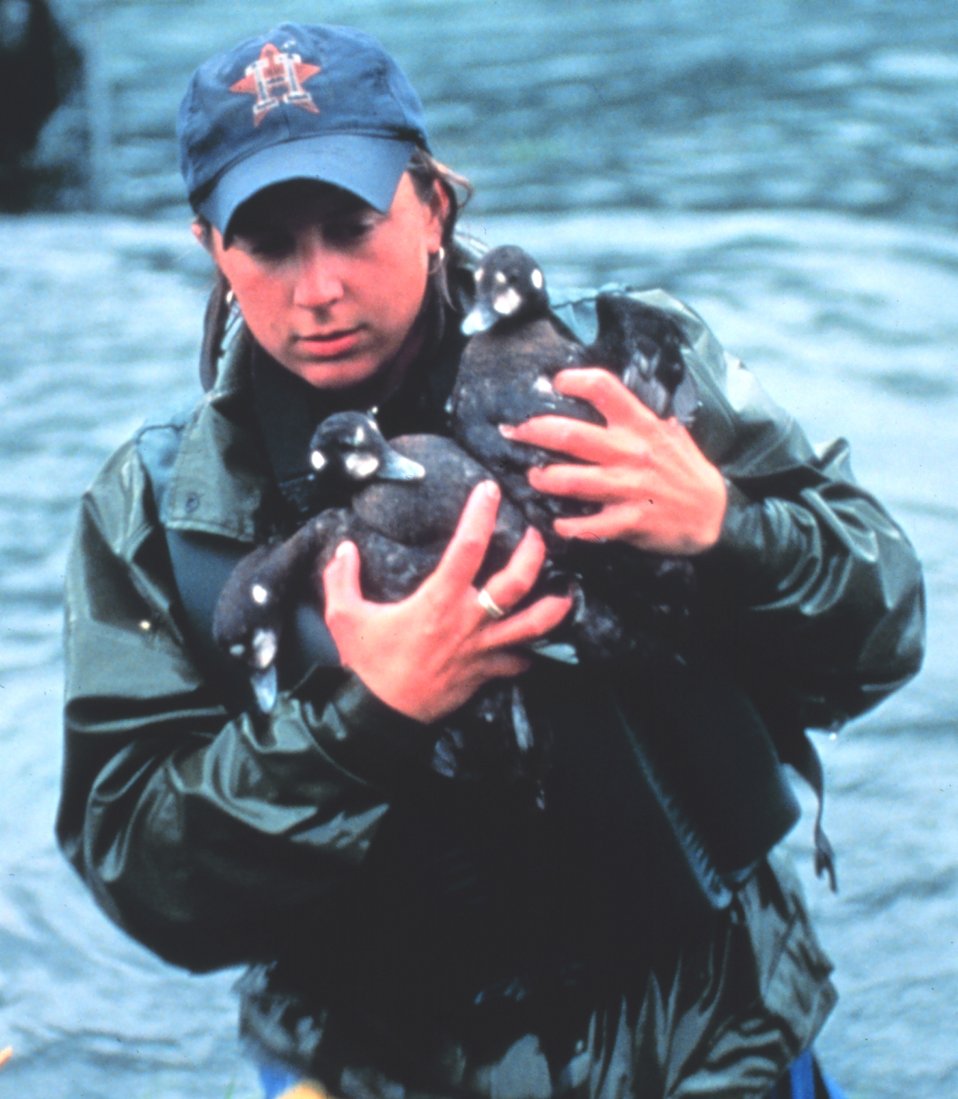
Rescuing oiled bald eagle